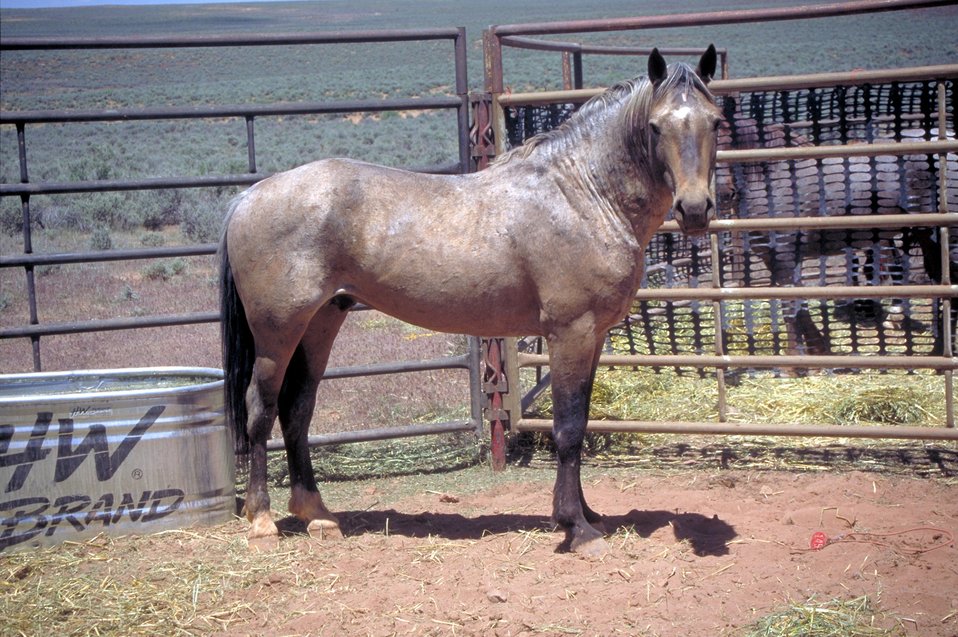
EIA testing near Vernal, Utah.